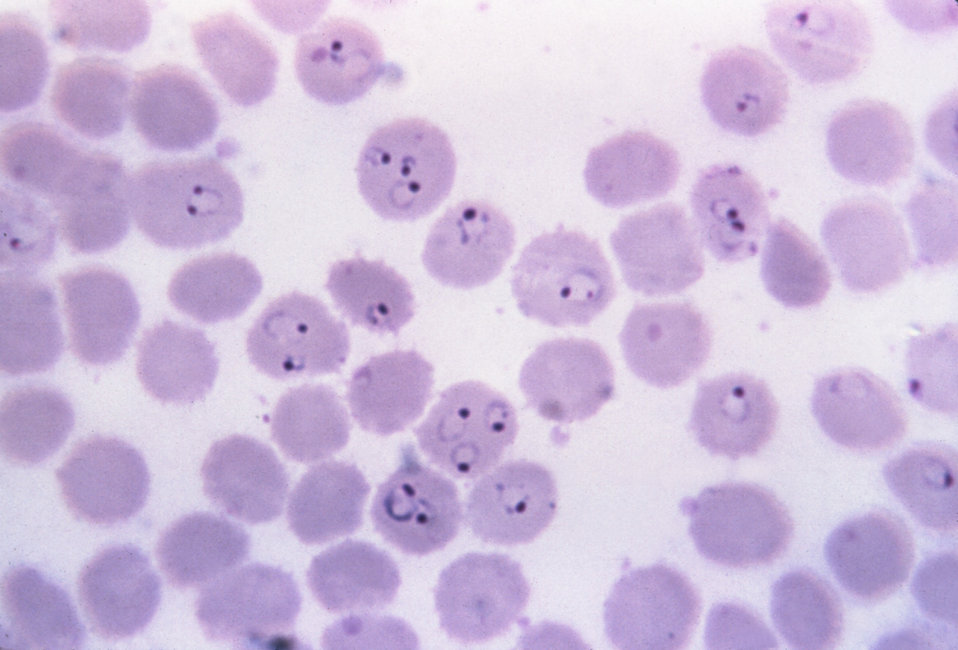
This thin film Giemsa stained micrograph depicts a number of ring-form Plasmodium falciparum trophozoites.